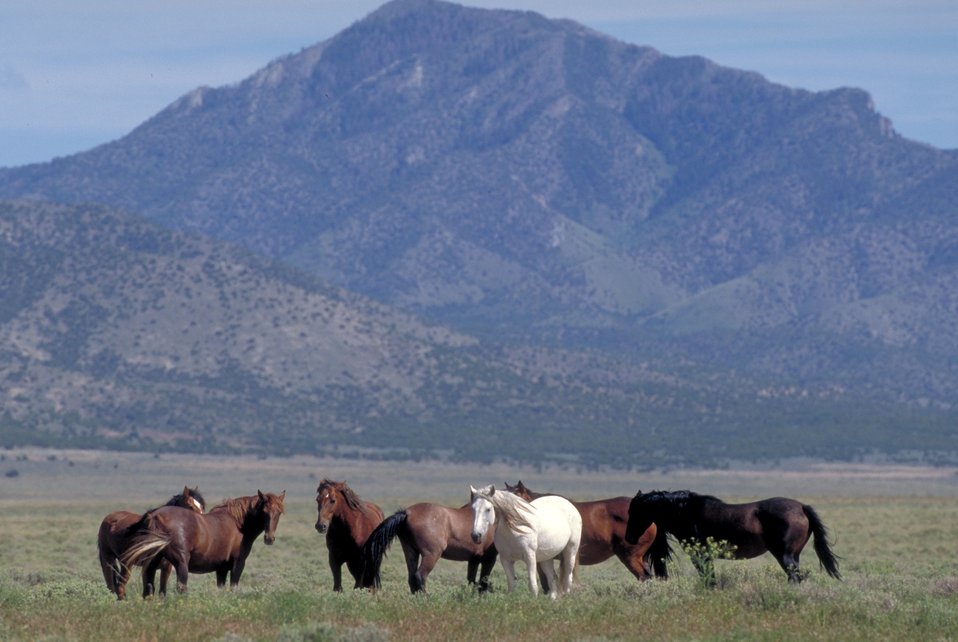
Onaqui Herd near Dugway, Utah.